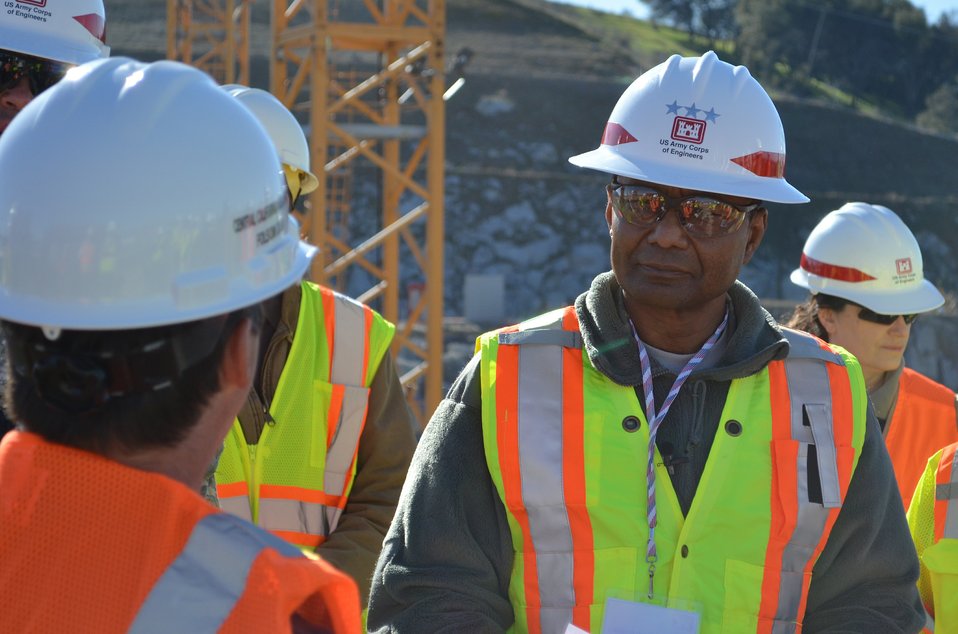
Corps commanding general visits Folsom Dam spillway project

Commanding general of the U.S. Corps of Engineers, Lt. Gen. Thomas P. Bostick, tours the Folsom Dam auxiliary spillway construction site in Folsom, Calif., Jan. 16, 2013. The spillway project is scheduled for completion in 2017.